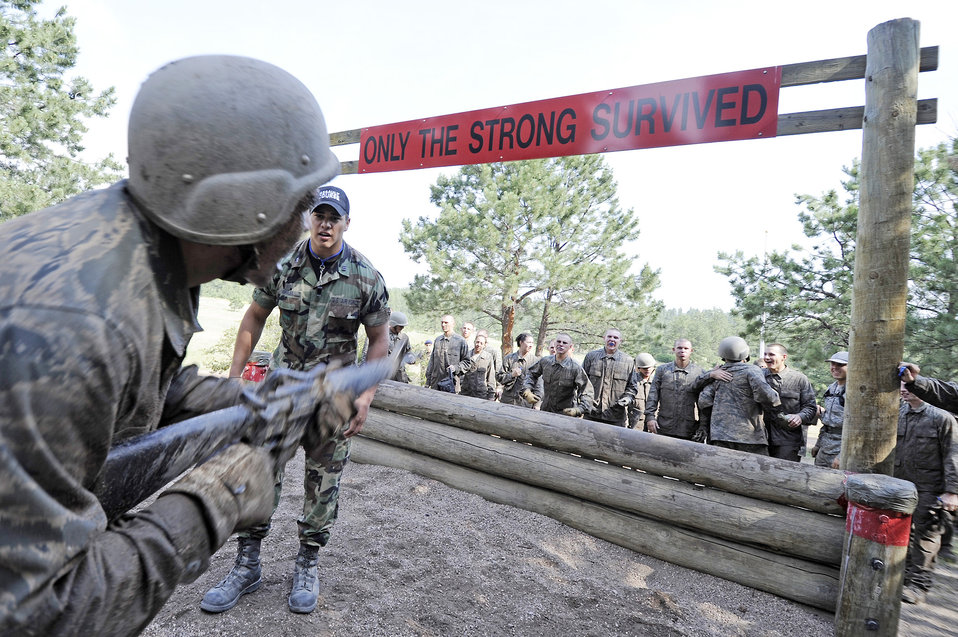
Academy basic field training at Jacks Valley

Air Force Academy Cadet 1st Class Myles Morales provides encouragement to a basic cadet almost at the finish of the Jacks Valley Assault Course July 21 near Colorado Springs, Colo. Basic cadet training started June 25 and continues through Aug. 1.